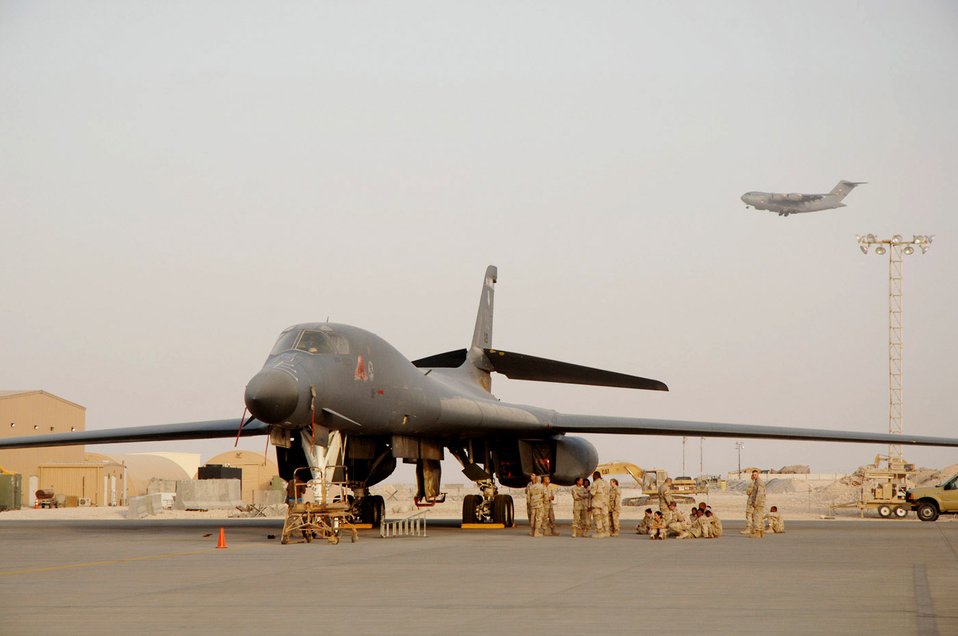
Airpower Summary for July 4, 2007

Maintainers ensure this B-1B Lancer is ready to go as a C-17 Globemaster III prepares to land at a forward deployed location in Southwest Asia July 1. B-1s provide close-air support for both Operation Enduring Freedom and Operation Iraqi Freedom.